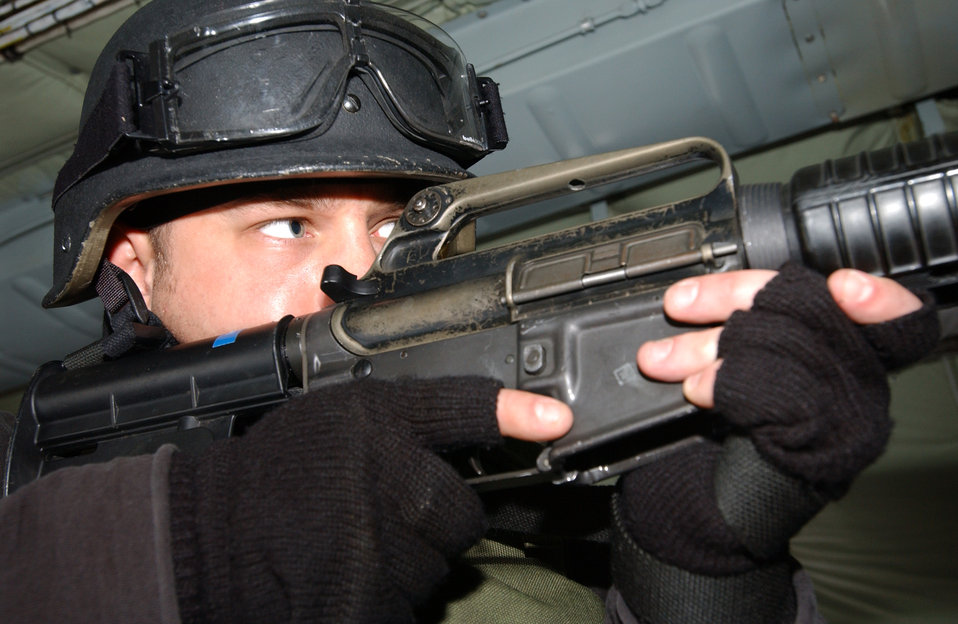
In my sights

ROYAL AIR FORCE FAIRFORD, England -- Airman 1st Class William Lannon participates in the recapturing of a KC-135 Stratotanker as part of a stop alert exercise here April 14. Airman Lannon is a security forces Airman with the 100th Security Forces Squadron.